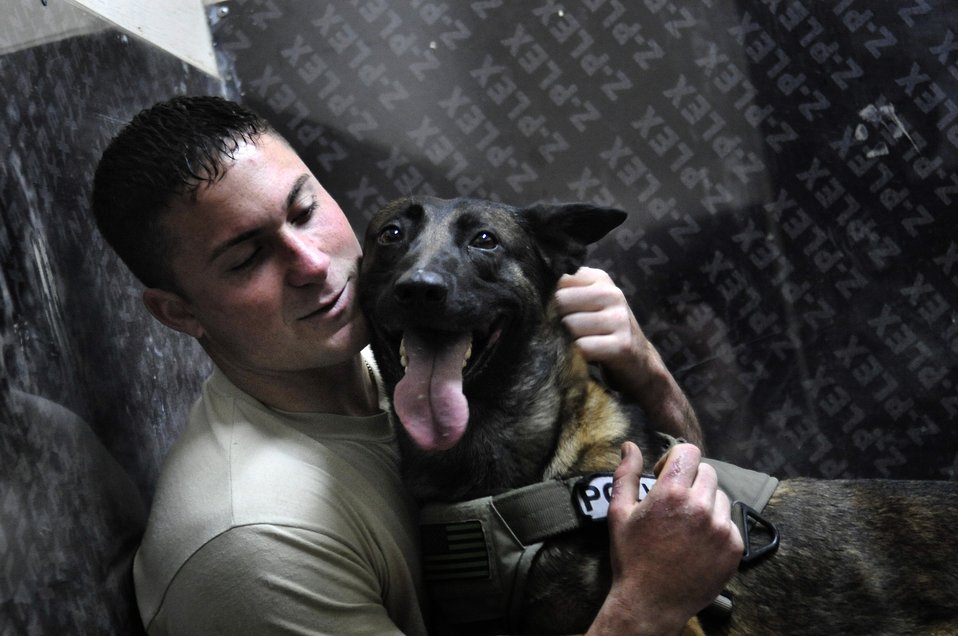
An Airman's Best Wingman

Geri, a patrol and explosive detector dog assigned to the 447th Expeditionary Security Forces Squadron, takes a break from a hard day of training with his handler Senior Airman Stephen Hanks, 447th ESFS military working dog handler, in the kennel of Sather Air Base, Baghdad, Iraq, Dec. 11, 2011. For the last six months Geri and Hanks, have been supporting Operation New Dawn by providing explosive and psychological deterrence. Hanks and Geri are deployed from Patrick Air Force Base, Fla. Hanks is from Amherst, Mass.